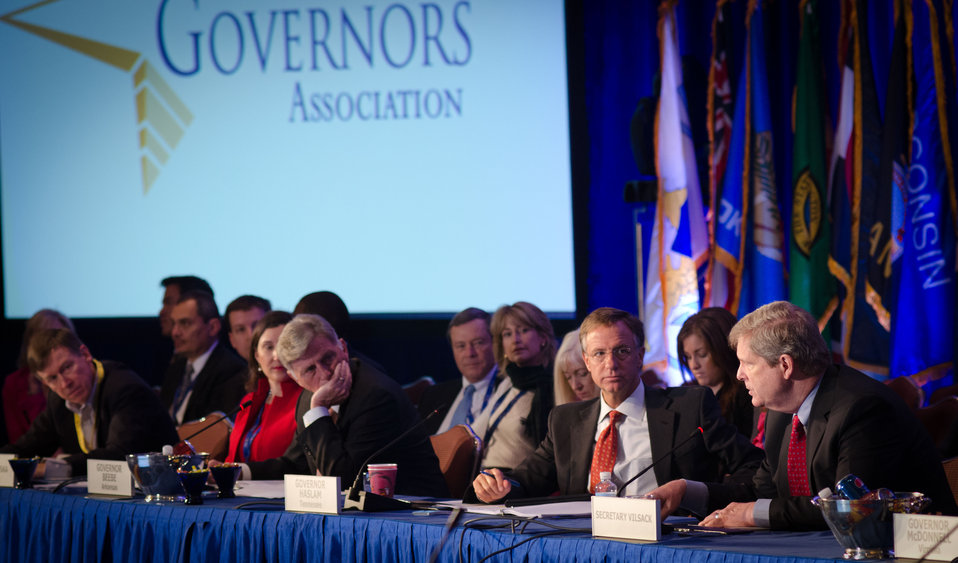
Agriculture Secretary Tom Vilsack (right) talked about the many ways the Department of Agriculture can help the children and the workforce, during the National Governors Association Education, Early Childhood and Workforce Committeemeeting in Washington, D.C., on Sunday, February 26, 2012. He discussed the Supplemental Nutrition Assistance Program (SNAP) and Electronic Benefits Transfer (EBT) cards that encourage healthy food choices by providing a reduced cost for healthy produce while fully reimbursing the grocery store. Nutrition for schoolchildren was also addressed by highlighting new recipes at www.usda.gov that make healthy choices, and tasty choices. Vilsack also encouraged growing vegetables at home and school gardens, pointing out the People’s Garden initiative which helps educate people in growing some of their own food.